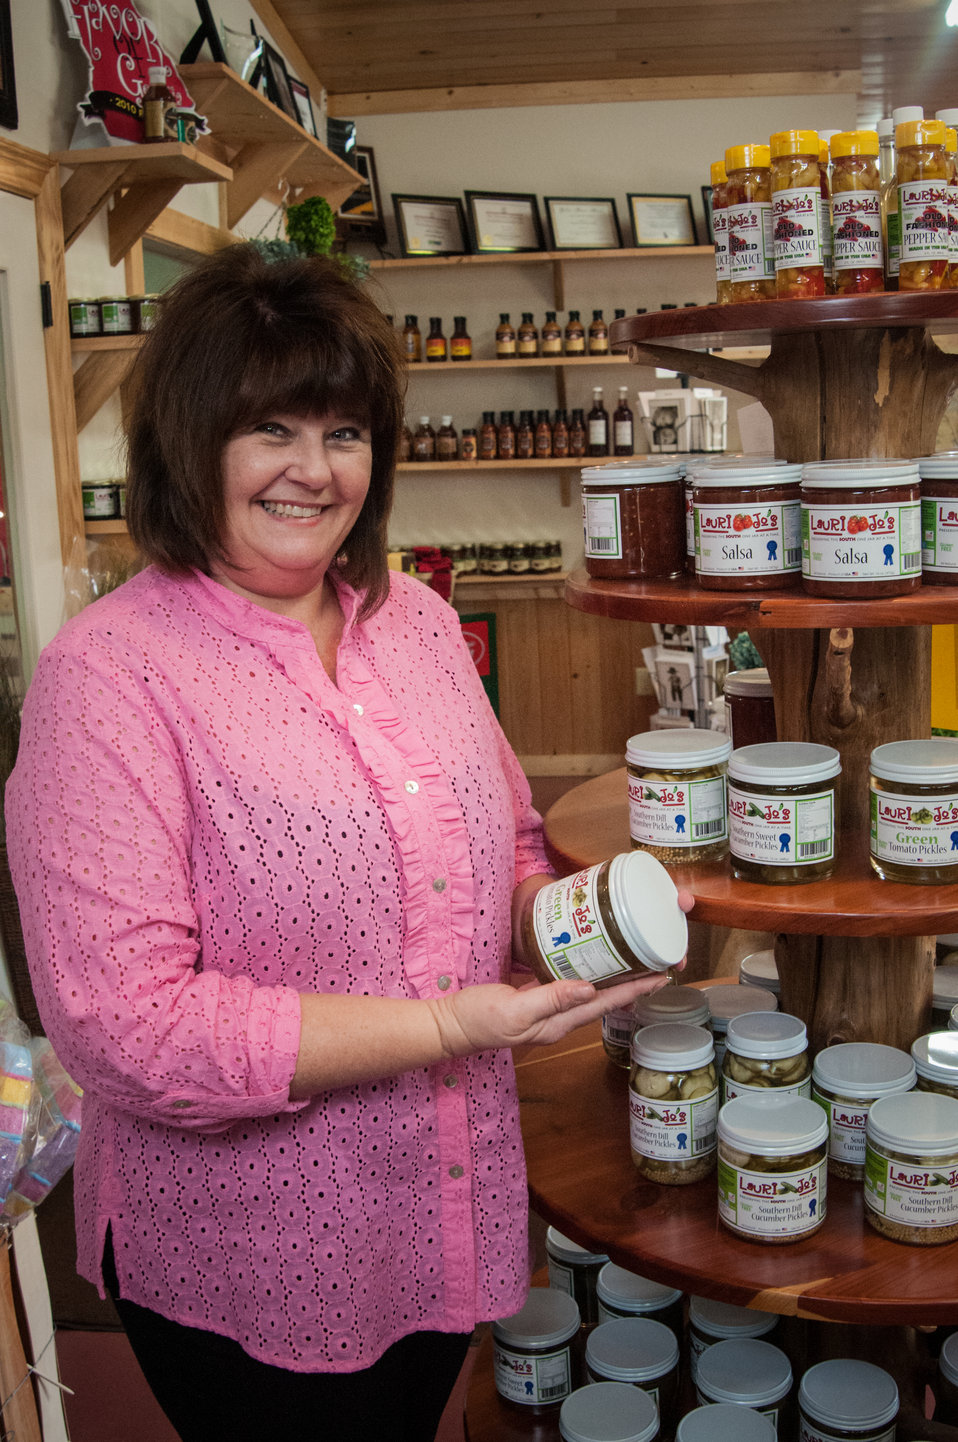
Laurie Jo’s Southern Style Canning business owner Laurie Jo Bennett shows off some of her new canned produce in the store in Norman Park, Colquitt County, GA on Mar. 7, 213. Bennett secured a U.S. Department of Agriculture (USDA) Rural Development (RD) Rural Business Enterprise Grant (RBEG) to help market her business Laurie Jo’s Southern Style Canning in Norman Park, Colquitt County, GA. Consumers may now purchase Lauri Jo’s Southern Style Canning Line in Whole Foods, Earth Fare and Kroger stores across 20 states. The grant from USDA has enable Lauri Jo to employ 26 people. The USDA Strike Force Initiative has designated Colquitt County, GA as a Strike Force county selected to receive assistance to relieve persistent poverty in historically high-poverty counties.